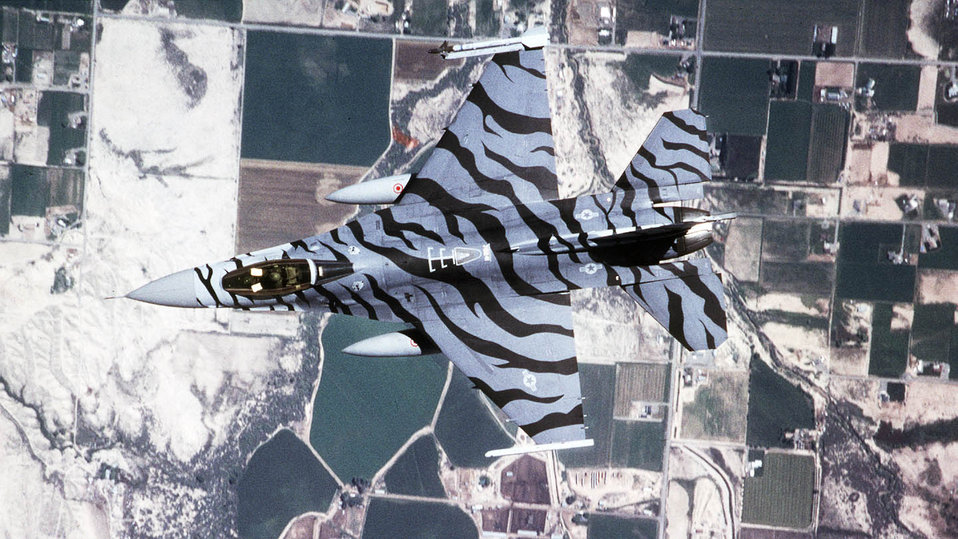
Tiger, tiger

OVER UTAH -- A look-down view of a Tiger-striped F-16C belonging to the 140th Fighter Wing, 120th Fighter Squadron, Colorado Air National Guard, as the aircraft flies over eastern Utah while returning from the Utah Test and Training Range. The aircraft has tiger-stripes applied to the upper surfaces and represented the Colorado ANG as their official Tiger jet as the unit hosted the Inaugural Tiger Meet of the Americas in mid-August. The inaugural meet closely mirrors the NATO Tiger Meet and brings together military units that have large cats as their mascots.